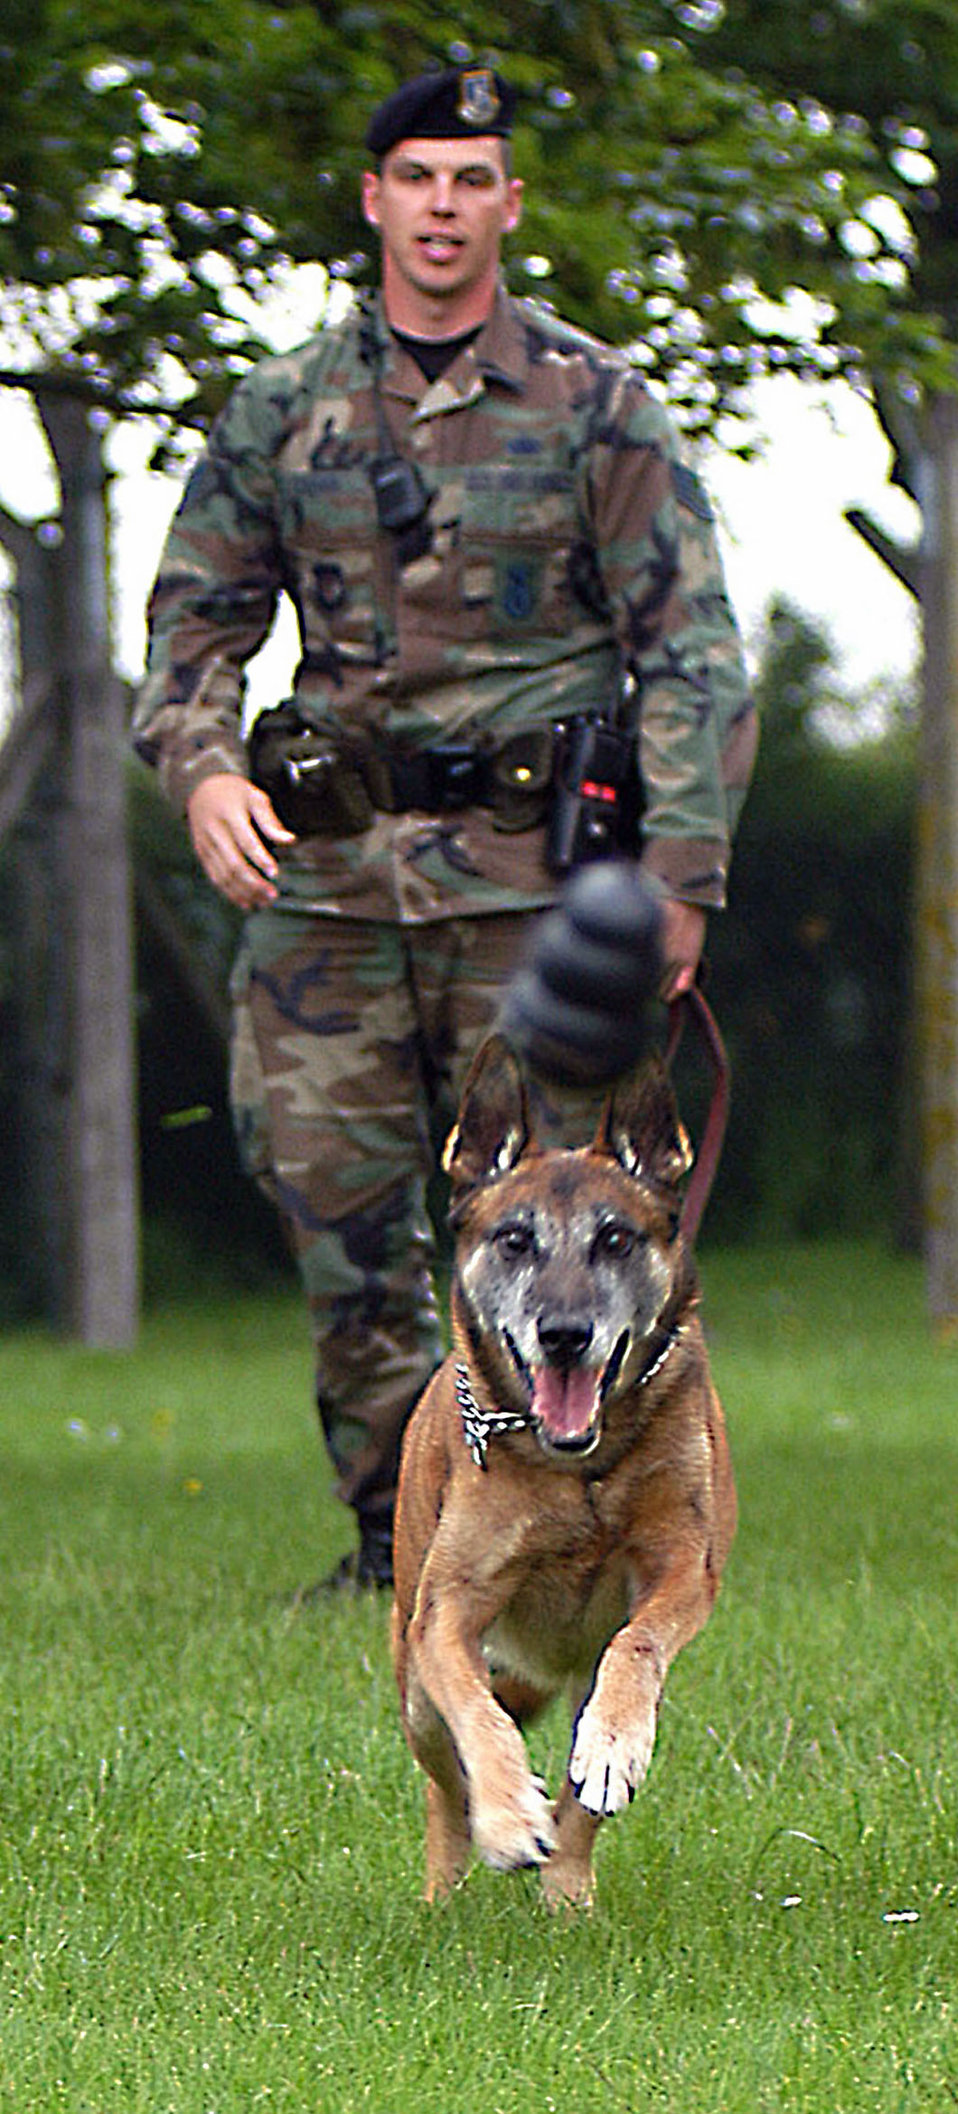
Time on his paws

ROYAL AIR FORCE LAKENHEATH, England -- Harras, a military working dog here, chases a toy thrown by his handler, Staff Sgt. Jeff Crawn. The 13-year-old working dog -- equivalent to 91 in human years -- retired May 23 during a ceremony after serving 12 years with the Air Force. Arthritis forced 48th Security Forces Squadron officials to relieve Harras of duties months ago. He will live out his retirement years under the care of the handlers and staff at the squadron's kennels.